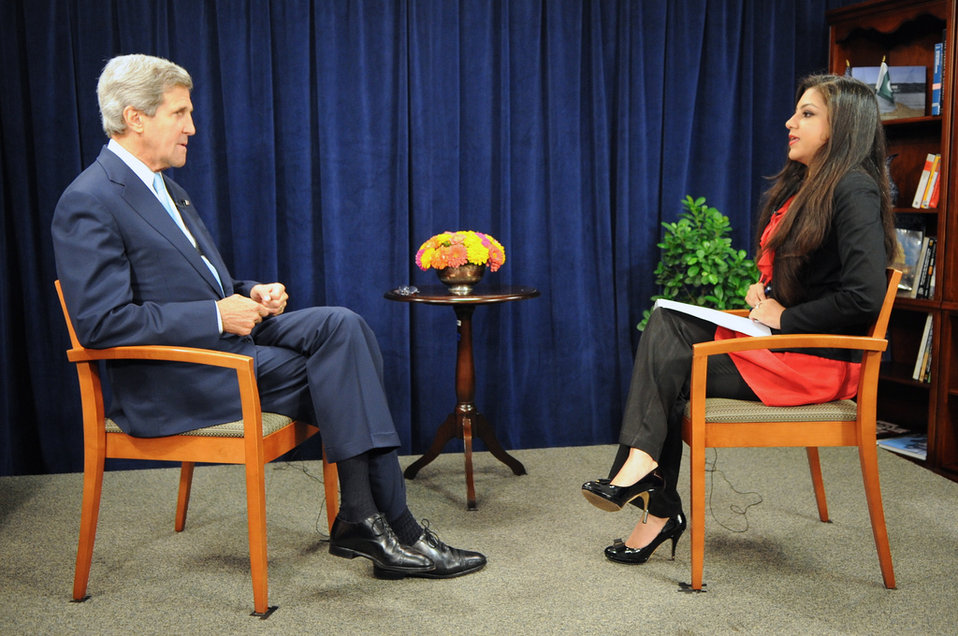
Secretary Kerry Conducts Pakistani TV Interviews

U.S. Secretary of State John Kerry sits with Mariam Chaudhry of Pakistan TV before the first of three interviews with local broadcast journalists in Islamabad, Pakistan, on August 1, 2013.